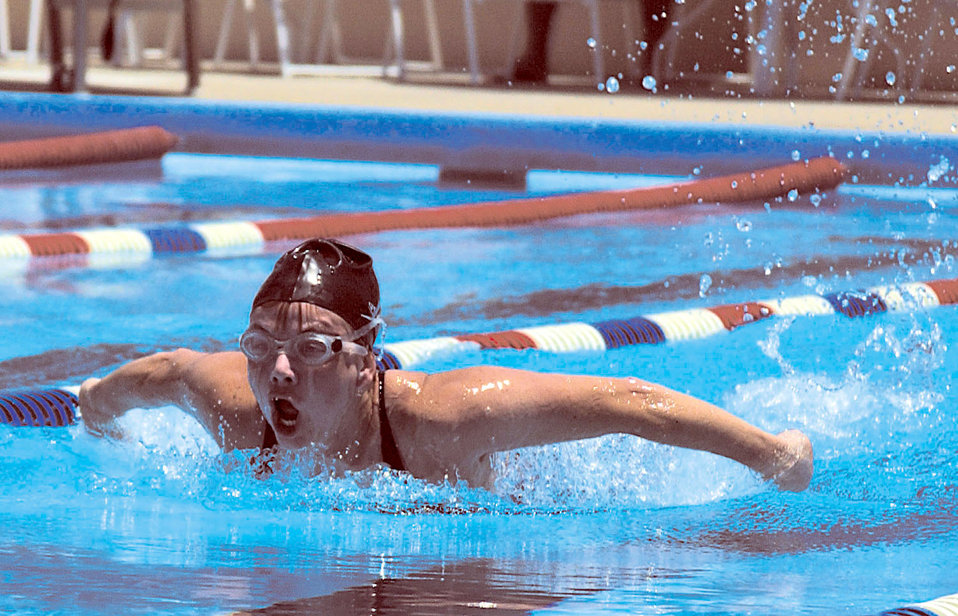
Beating the heat

MACDILL AIR FORCE BASE, Fla. -- Maj. Wendy Klein enjoys warmer days here with this year's first dip in the base pool May 27. Major Klein has been swimming since her days on the local youth swim team and now enjoys it as an alternative to fighting crowds at the fitness center. She is assigned to the 6th Aeromedical Squadron.